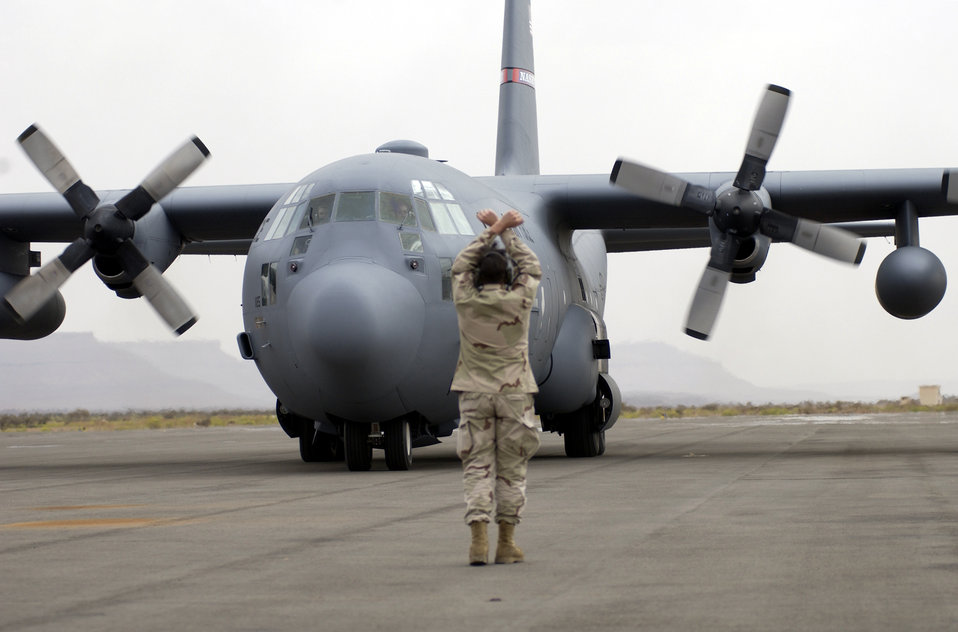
Out of Africa

ATAR AIRPORT, Mauritania -- Tech. Sgt. Eric Wilhelm marshals a C-130 Hercules into its parking area. Sergeant Wilhelm is an aerial porter for the 86th Contingency Response Group. He is the deployed mission-support team's chief. The team pulled Soldiers from Africa who were working on the Pan Sahel Initiative. The Soldiers trained the African military in force protection, border patrol and anti-terrorism tactics.